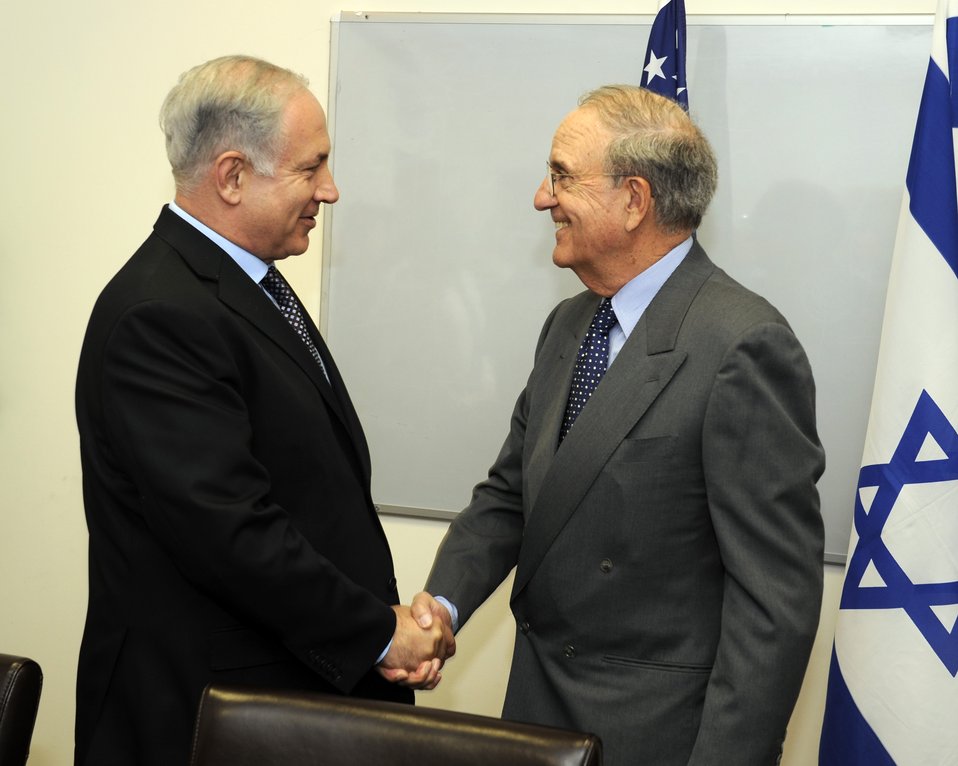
Special Envoy Mitchell Shakes Hands With Israeli Prime Minister Netanyahu

Special Envoy for Middle East Peace George Mitchell meets with Israeli Prime Minister Binyamin Netanyahu at the Prime Minister’s office at the Israeli Ministry of Defense, Tel Aviv, Israel, May 6, 2010.